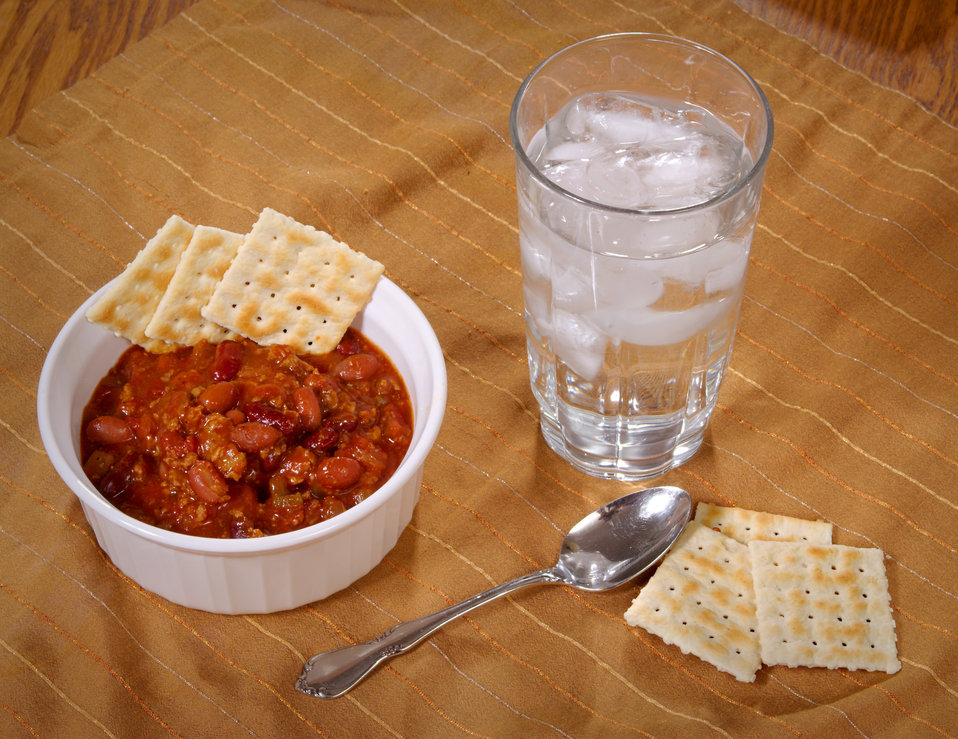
Here we have a bowl of beef chili and crackers, and an accompanying glass of water. A delicious food, chili, when made with beef, is much higher in its calorie-density than its nutrient-dense, vegetarian counterpart, made with soy.